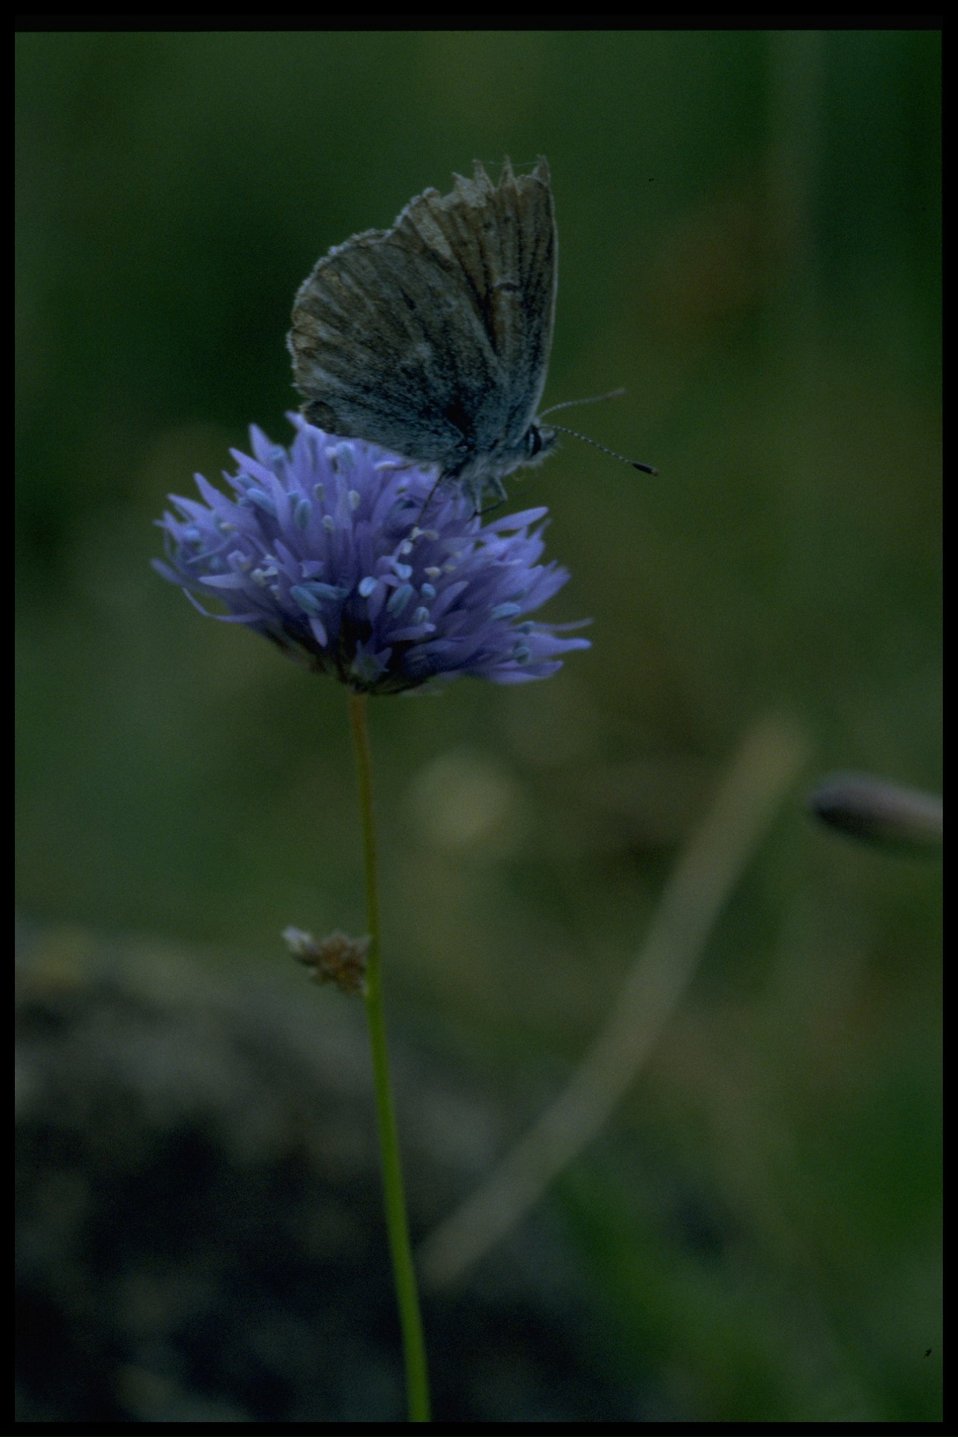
Medium shot of butterfly and Gilia (Ipomopsis) capitata.